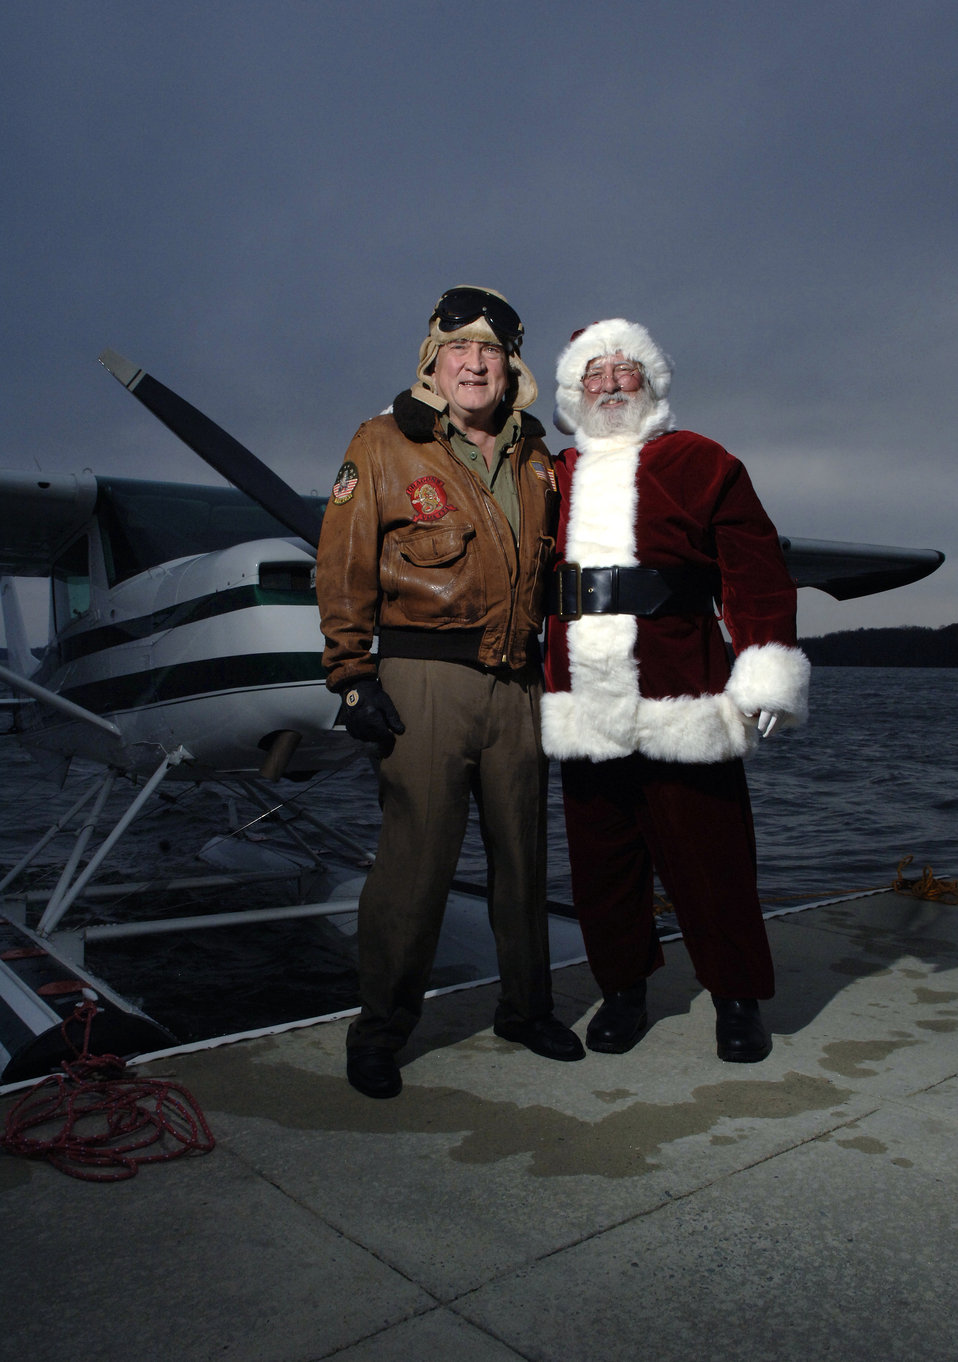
Santa brings holiday cheer to Arnold party

Santa Claus stands with Dr. William Freeman, a retired Air Force flight surgeon and F-4 Phantom II pilot, in front of the doctor's amphibian Cessna aircraft. Dr. Freeman flew Santa to Arnold Air Force Base, Tenn., Dec. 2 for a Christmas party on the base.